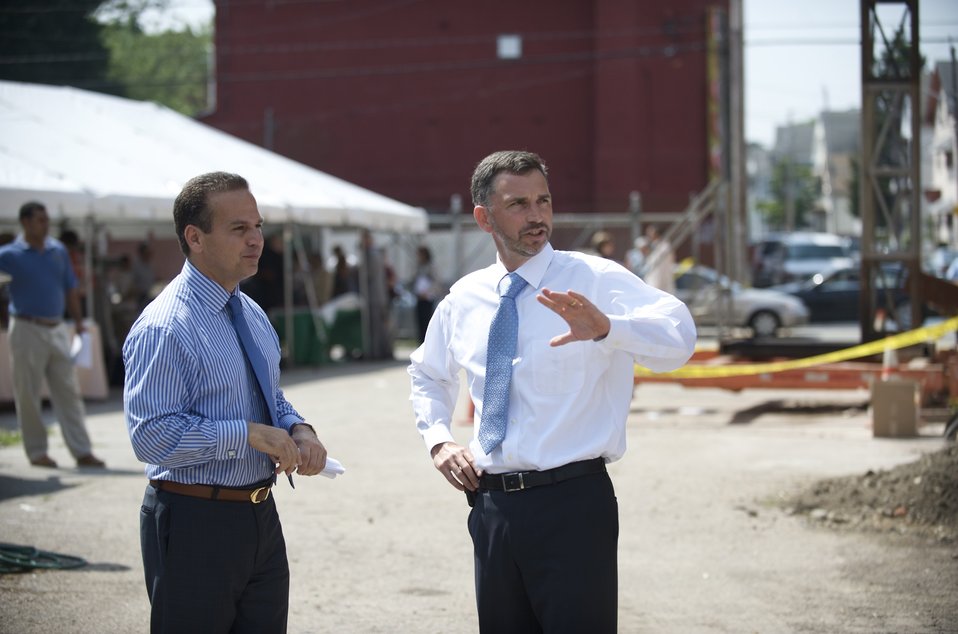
RI Ground Breaking 6/28/10

Assistant Secretary for Management Dan Tangherlini and Providence Mayor David Cicilline spoke about the new OpenDoors development before the groundbreaking.